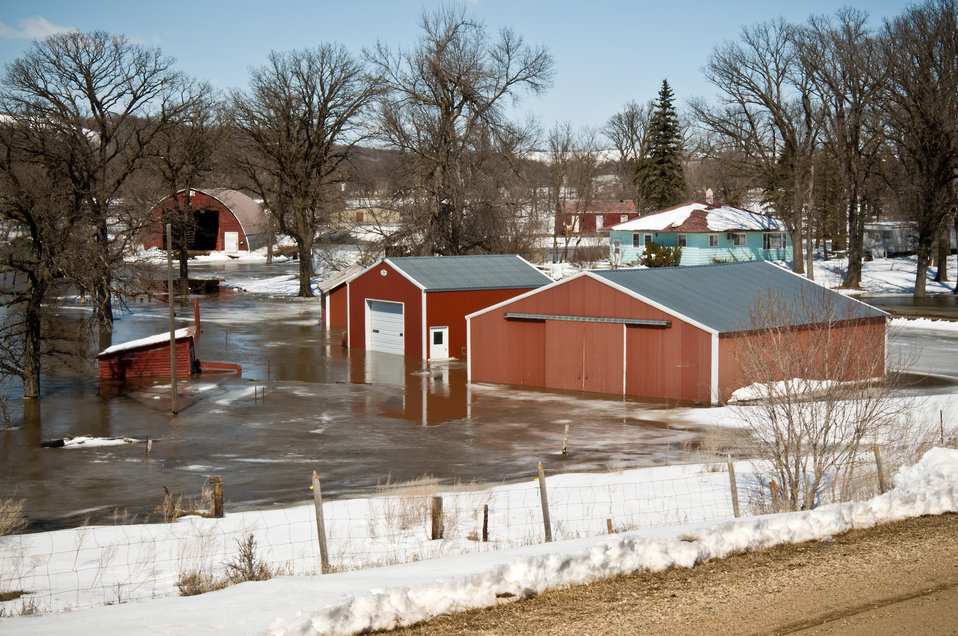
Farmland was under water in North Dakota on April 8, 2009 due to the Red and Missouri Rivers overflowing their banks. North Dakota received abnormally heavy winter snows atop saturated and frozen ground, which was already saturated when it froze at the beginning of winter, melting snow which could not be absorbed by the frozen ground, additional precipitation from a rain storm on March 22, 2009 and a late snowstorm at the end of the month added to the existing snowpack.